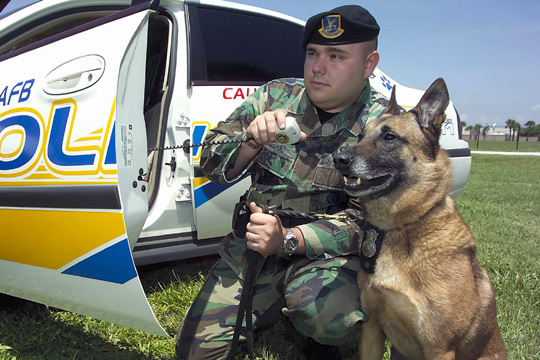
Military working dog sniffs out suspicious vehicle

PATRICK AIR FORCE BASE, Fla. (AFPN) -- Staff Sgt. Brian A. Disorbo and his partner, Pancho, respond to a call. Both are assigned to the 45th Security Forces Squadron here.